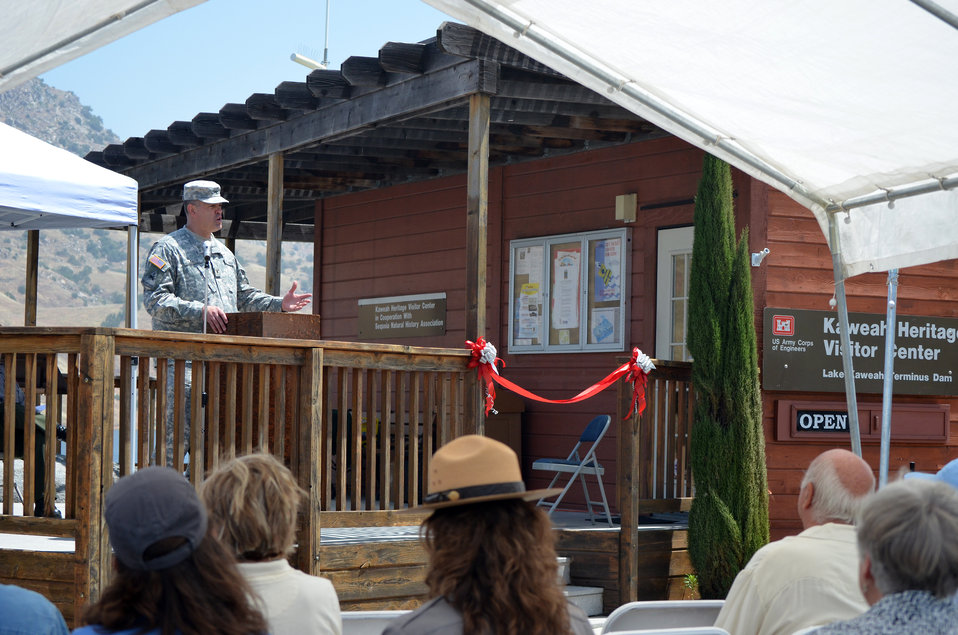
Lake Kaweah celebrates 50 years!

U.S. Army Corps of Engineers Sacramento District commander, Col. Bill Leady, speaks at a celebration of the 50th anniversary of Lake Kaweah and Terminus Dam near Visalia, Calif., May 18, 2012. Since 1962, the dam has provided reduced risk of flooding and millions of dollars in agricultural, recreation and natural resources benefits.